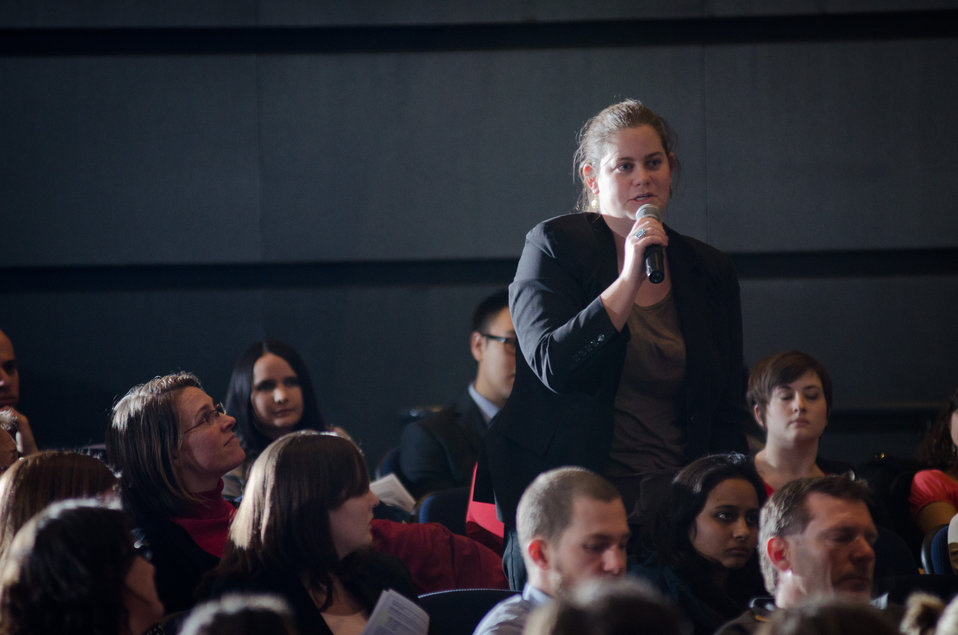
Erin Thompson from Bellingham, Washington, presented a question about farm worker pay and conditions to the panelists National Sustainable Agriculture Coalition Executive Director Susan Prolman, Food Research and Action Center President Jim Weill, Michael Fields Agricultural Institute Public Policy Program Director Margaret Krome, Environmental Working Group President and Co-Founder Ken Cook, Agriculture Deputy Secretary Kathleen Merrigan and Former Agriculture Secretary and moderator Dan Glickman at the “Shaping the Farm Bill for a Sustainable Future” Forum in the Jack Morton Auditorium, at the Trachtenberg School of Public Policy and Public Administration, on the George Washington University campus in Washington, D.C., on Thursday, March 1, 2012.